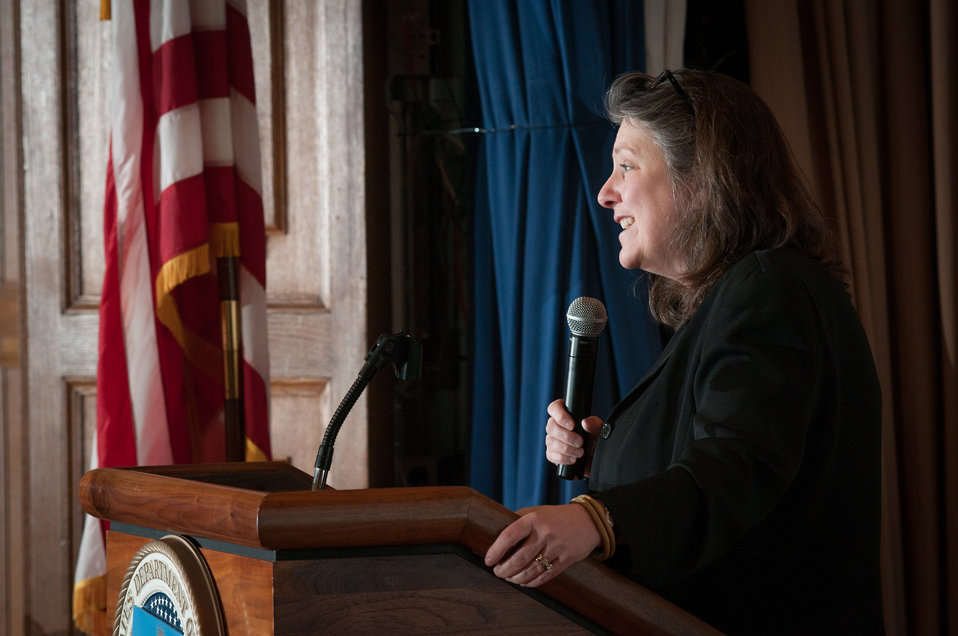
U.S. Department of Agriculture (USDA) Deputy Secretary Kathleen Merrigan, Ph.D., makes opening remarks, during the “Women Inspiring Innovation Through Imagination: Celebrating Women in Science, Technology, Engineering, and Mathematics” event, onThursday, March 21, 2013, in Washington, D.C.